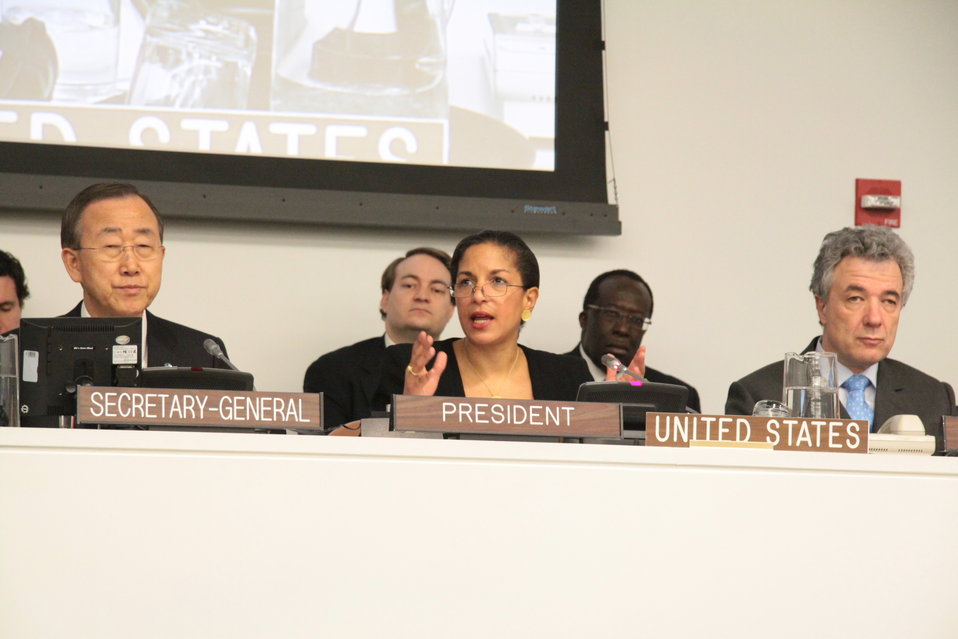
Secretary General Ban Ki-moon and Ambassador Rice Listen to Young People

UN Secretary General Ban Ki-moon, left, and U.S. Special Representative to the United Nations Susan Rice, center, listen to a video of a young person expressing her opinion of what should be on the agenda of the UN Security Council during the special event, Voices of a New Generation, at the United Nations in New York, New York, on December 21, 2010.